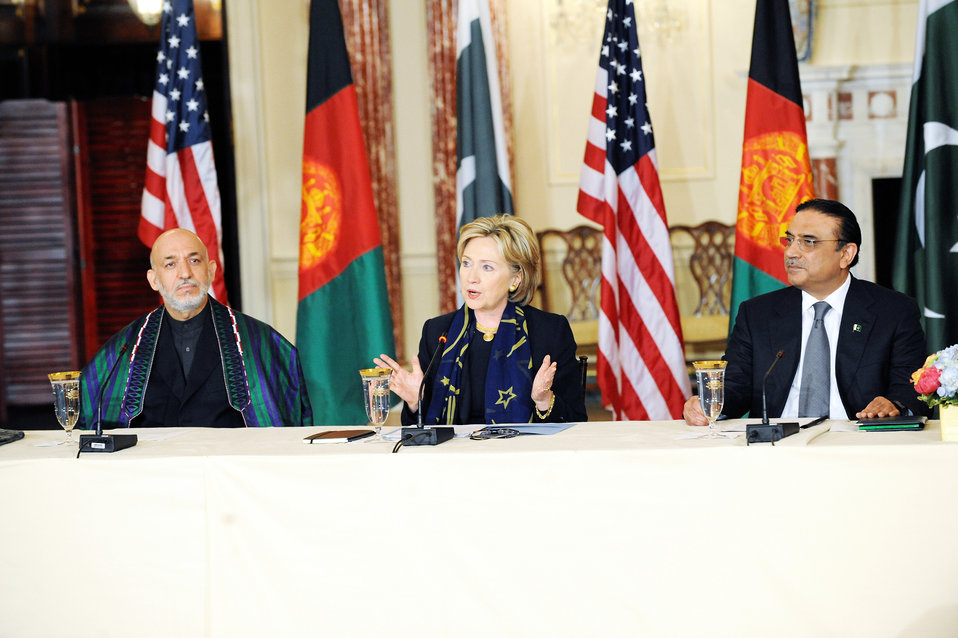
Trilateral Consultations With Afghanistan and Pakistan

U.S. Secretary of State Hillary Rodham Clinton provides remarks during talks with Afghan President Hamid Karzai and Pakistani President Asif Ali Zardari during trilateral consultations with Afghanistan and Pakistan at the U.S. Department of State in Washington, DC May 6, 2009.